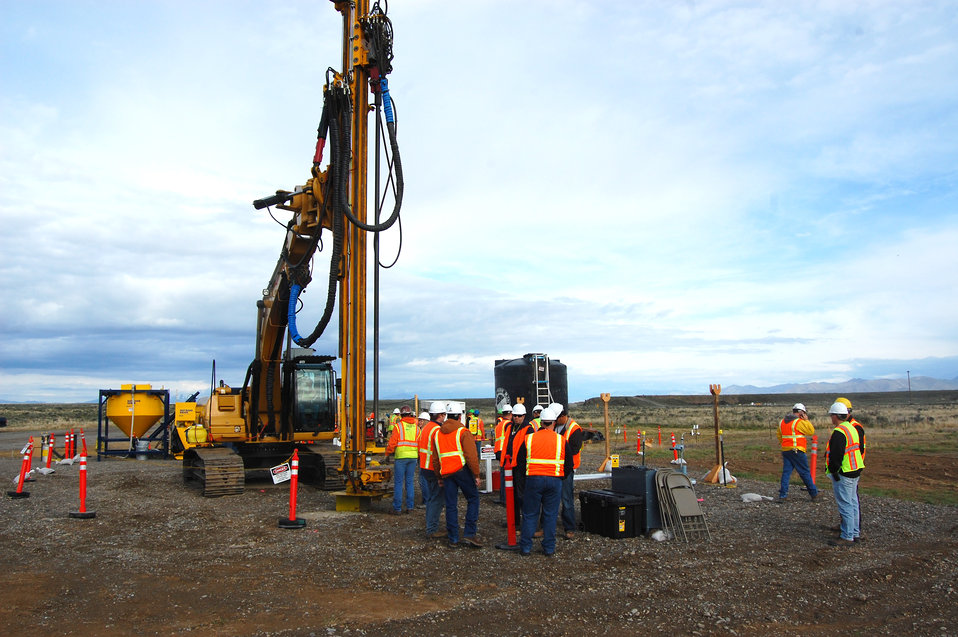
Idaho Cleanup Project Finishes Recovery Act Project to Protect Aquifer Early

Workers break ground on an $8.2 million Recovery Act project to grout buried waste, work that helps protect the Snake River Plain Aquifer.